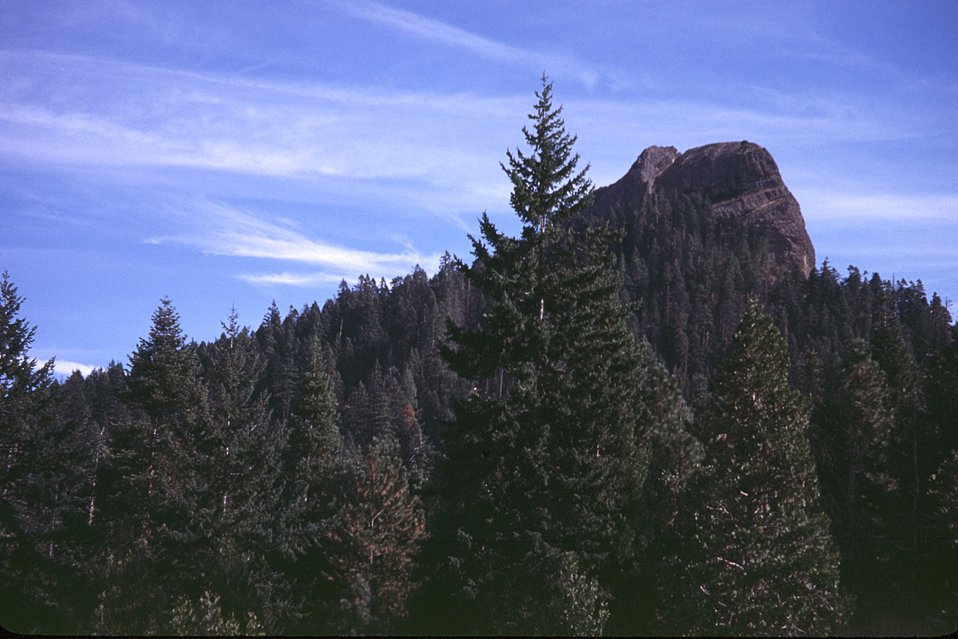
Pilot Rock taken from Pilot Rock Road.